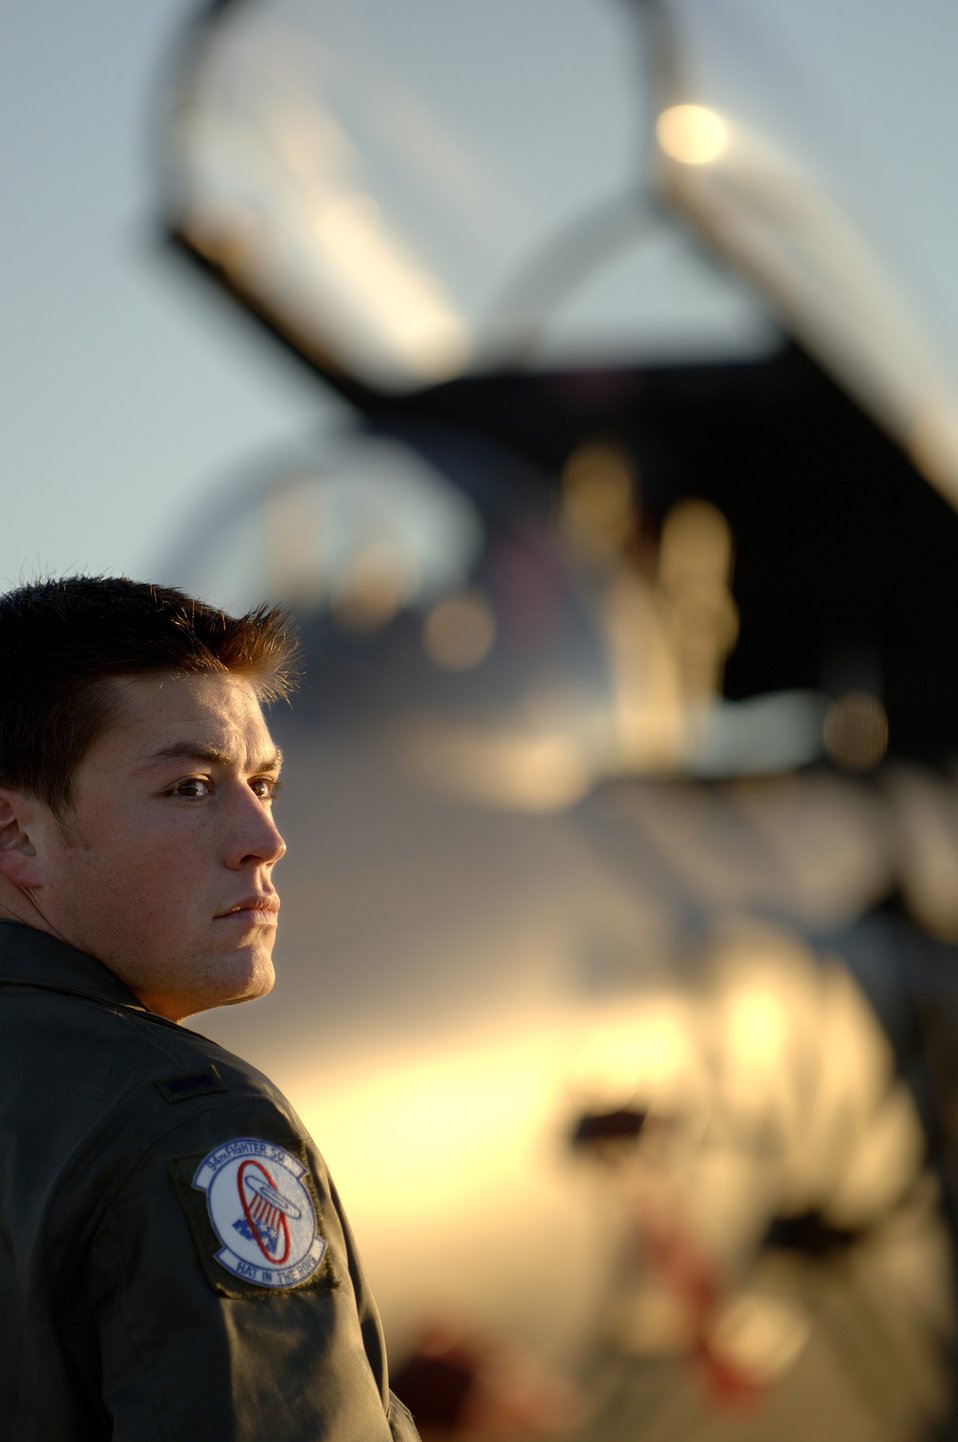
Stealthy transition

LANGLEY AIR FORCE BASE, Va. (AFPN) -- 1st Lt. Dustin Ripley is an F-15 Eagle pilot with the 94th Fighter Squadron. He will be moving to the 71st Fighter Squadron when the 94th becomes the second F-22A Raptor unit here.